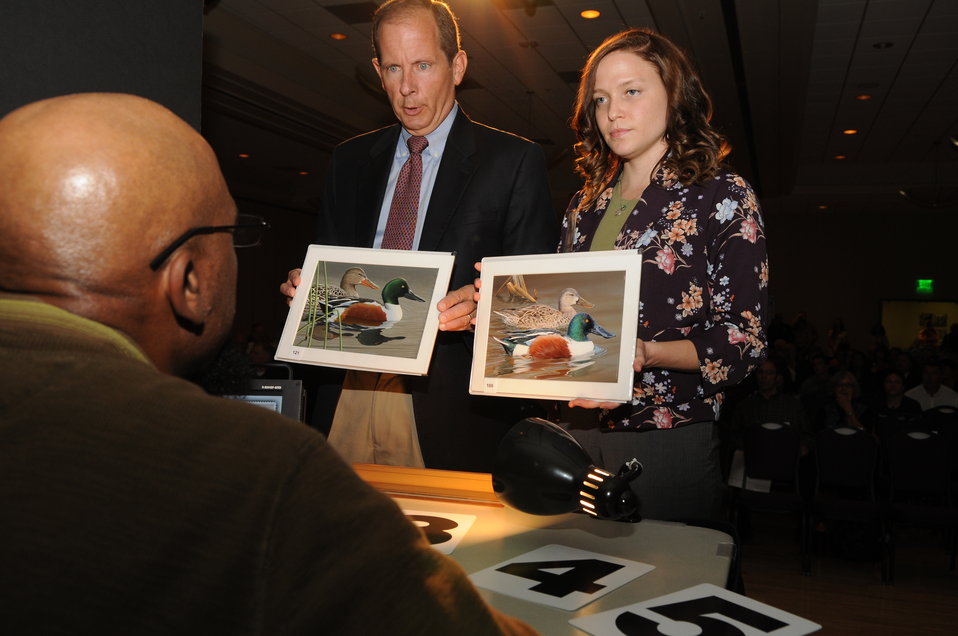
Judging

The U.S. Fish & Wildlife Service sponsored the 2012 Federal Duck Stamp Art Contest September 28 and 29 in Ogden, Utah, at Weber State University. A panel of five judges was responsible for choosing the art work used to design the 2013-2014 Migratory Bird Hunting and Conservation Stamp.